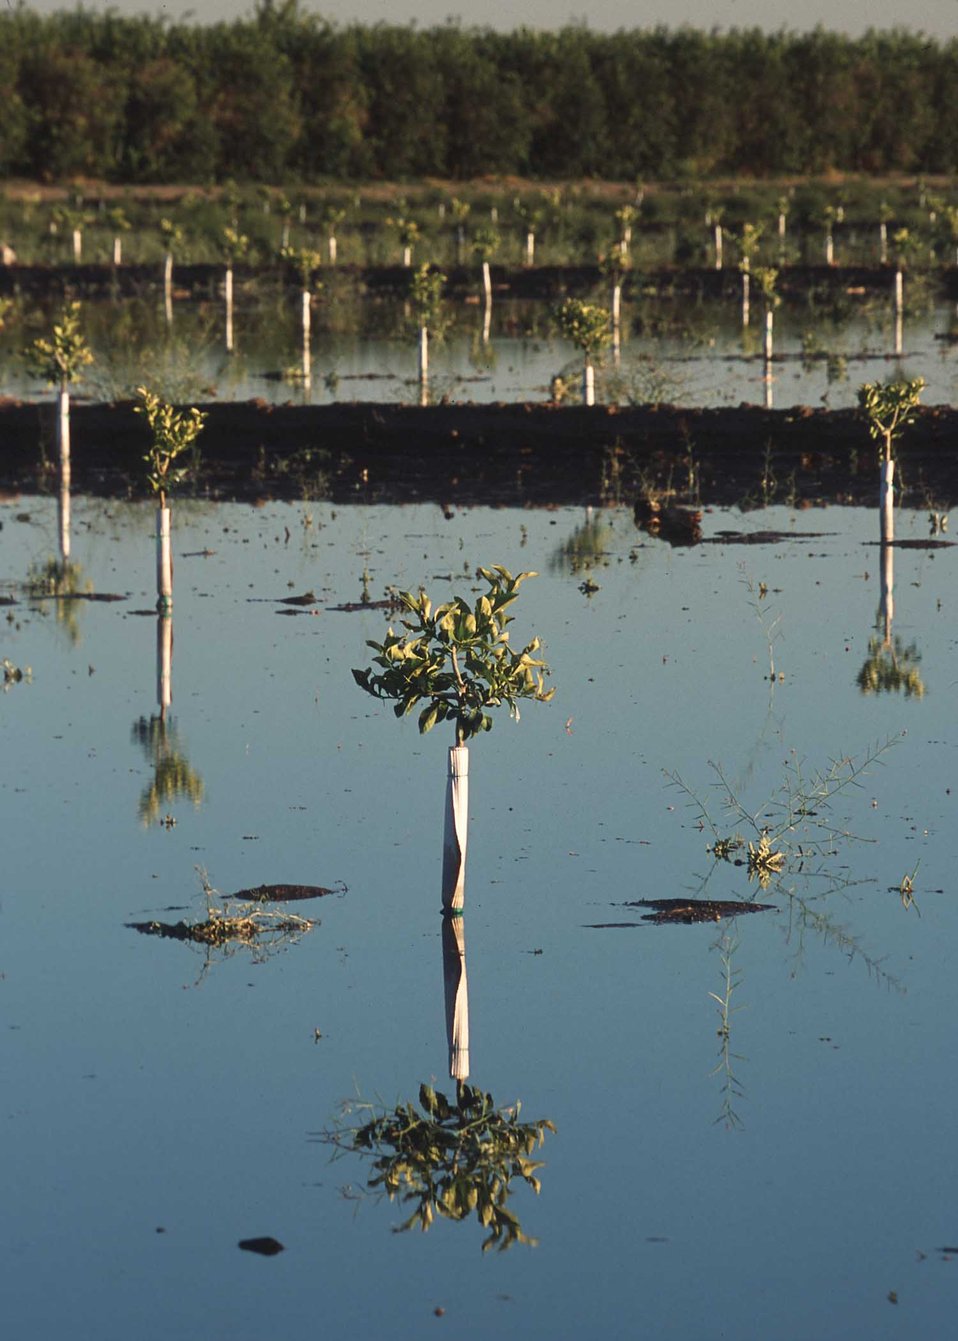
Level basin irrigation on newly planted citrus trees. Yuma, Az.